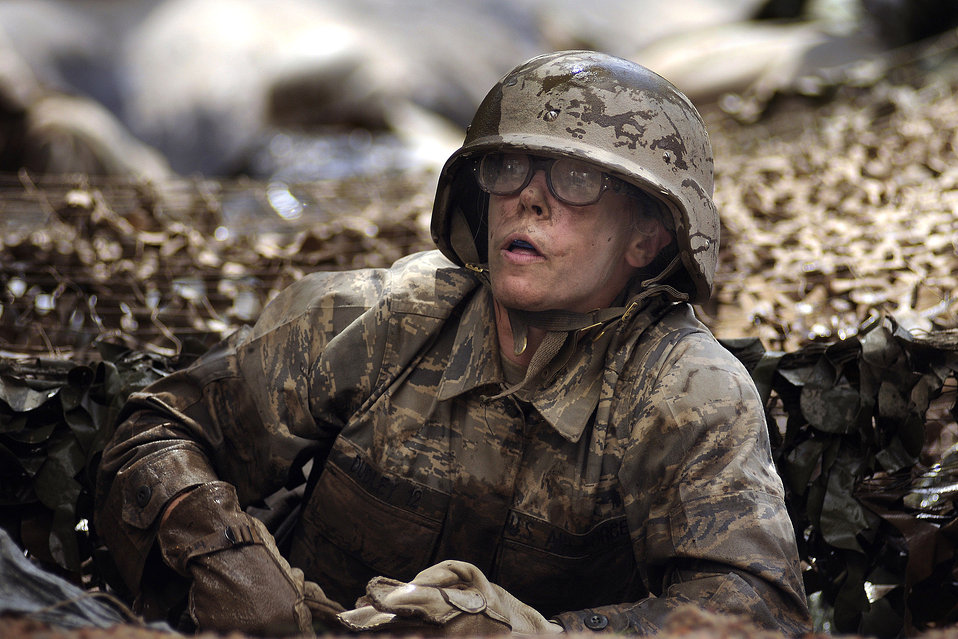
Low crawl

U.S. Air Force Academy basic cadet Jenna Dudley crawls out of a water obstacle on the assault course during basic cadet training in the Jacks Valley training area July 25.